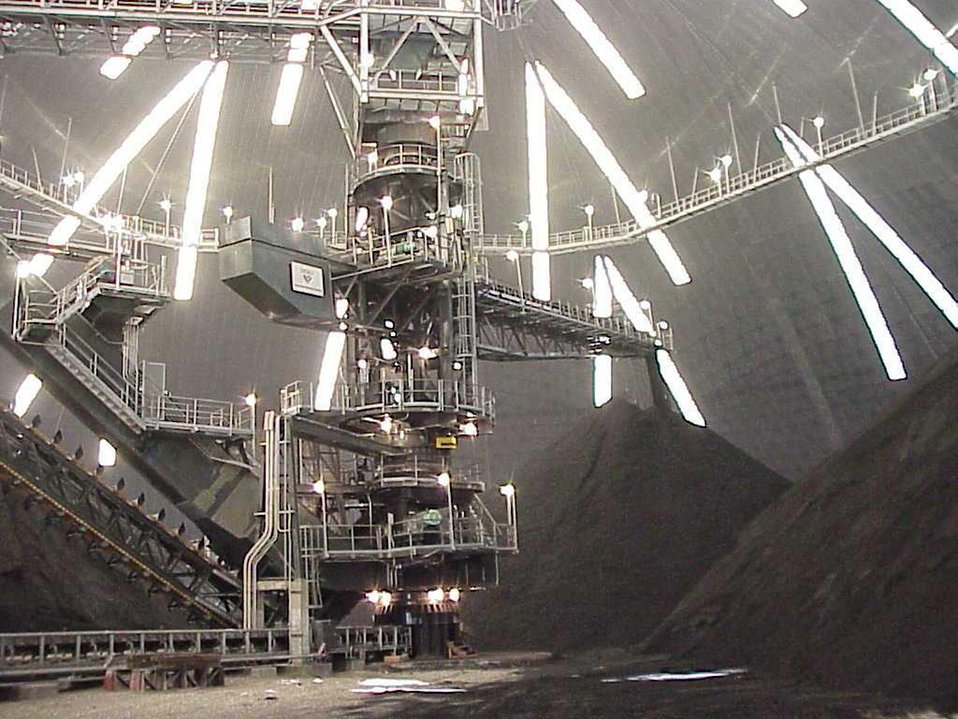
THE JACKSON ELECTRIC AUTHORITY COAL STORAGE DOME FILLING WITH COKE.

THE JACKSON ELECTRIC AUTHORITY, JACKSON, TENNESSEE, IS HOST TO THE JEA LARGE SCALE CIRCULATING FLUIDIZED BED COMBUSTION DEMONSTRATION PROJECT, THE WORLD'S LARGEST OPERATING FLUIDIZED BED COMBUSTOR. SHOWN IN THE IMAGES IS THE JEA PROJECT COAL STORAGE DOME DURING ITS INITIAL FILL WITH COAL.